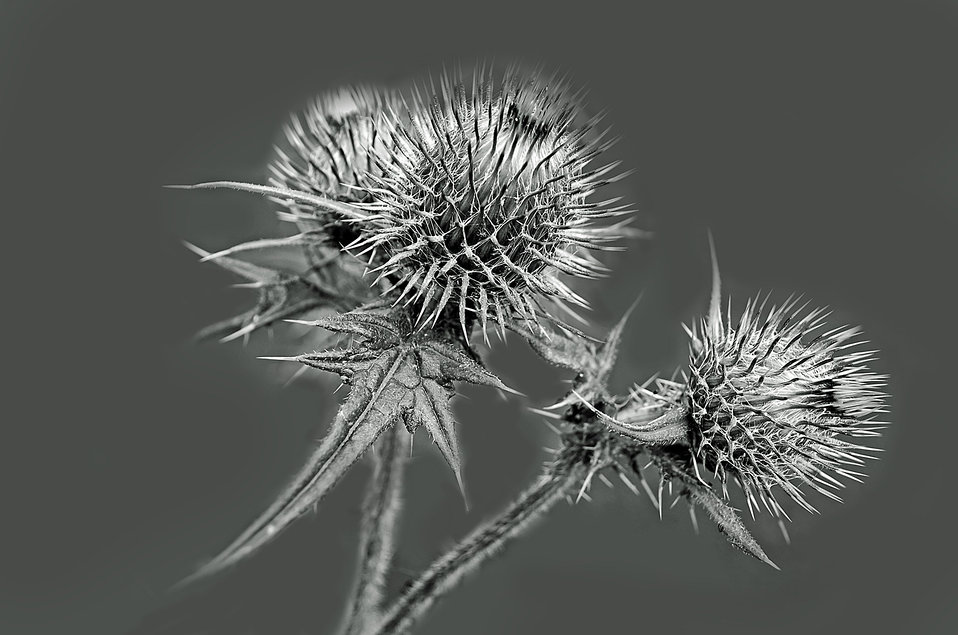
Thistle - black and white.